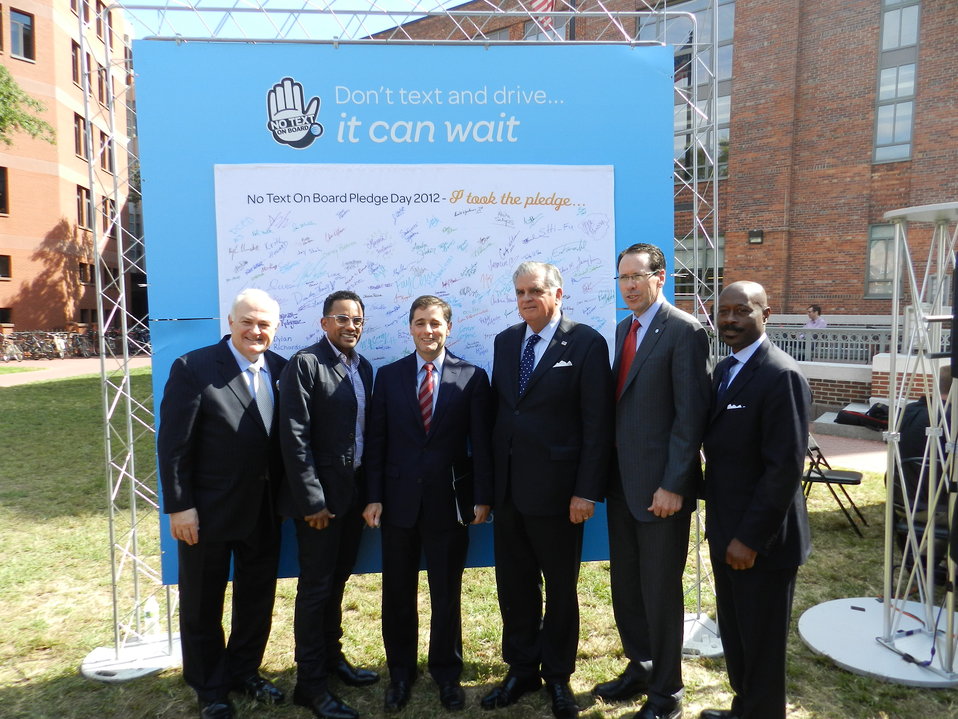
It Can Wait Pledge Day 9.19.12

Steven Knapp, Hill Harper, Chairman Genachowski, Sec. Ray LaHood, Randall Stephenson, ‘No Text On Board’ Pledge Day Event, The George Washington University, Washington, D.C. September 19, 2012